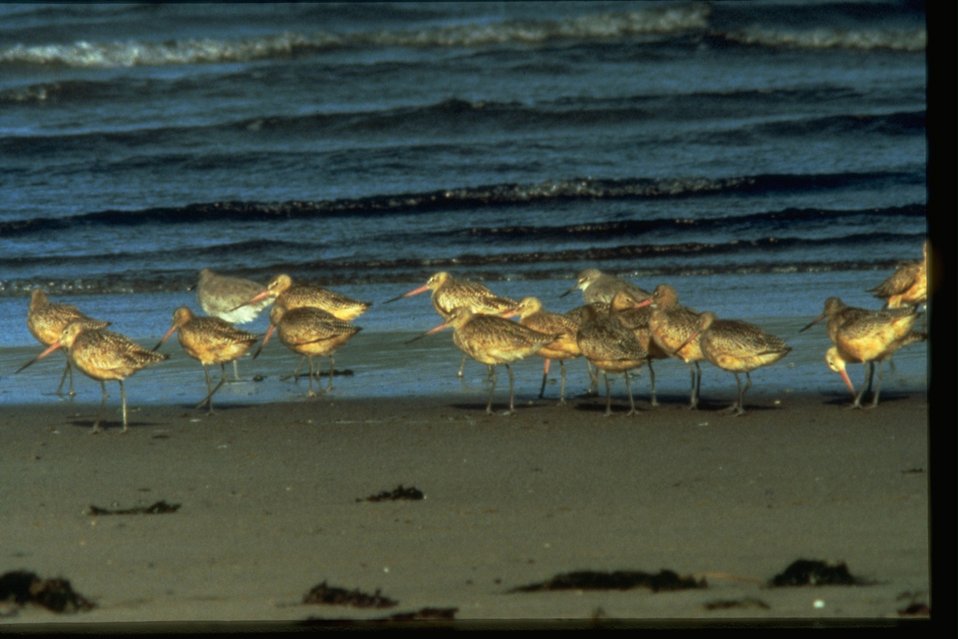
Godwits standing along the coast.